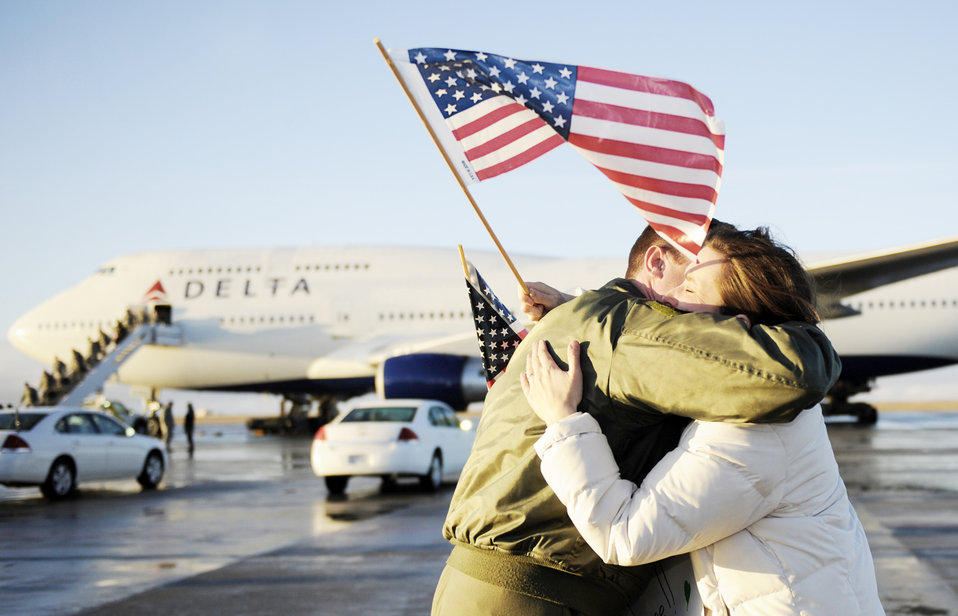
Squadron returns from South Korea

Lt. Col. Evan Pettus, 389th Fighter Squadron commander, reunites with his wife, Kirsten, after returning from a four-month deployment to South Korea Jan. 20, 2010, at Mountain Home Air Force Base, Idaho.